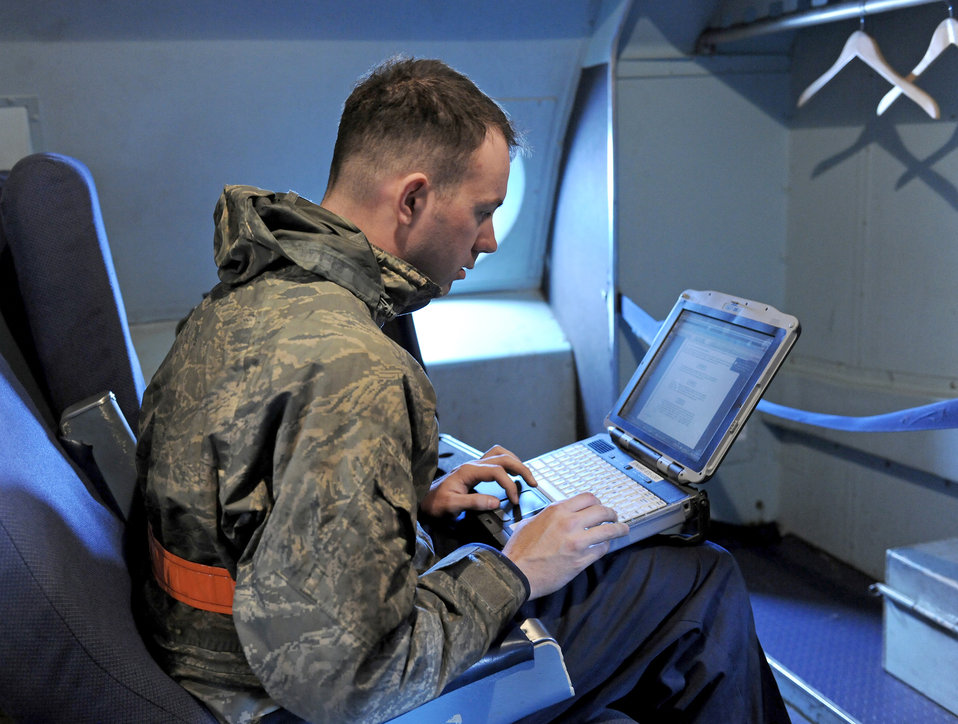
Preflight inspections

Senior Airman Joel Ireland reviews a technical order aboard a C-5 Galaxy April 12, 2011, at Spangdahlem Air Base, Germany. Airman Ireland is an integrated avionics journeyman assigned to the 726th Air Mobility Squadron.